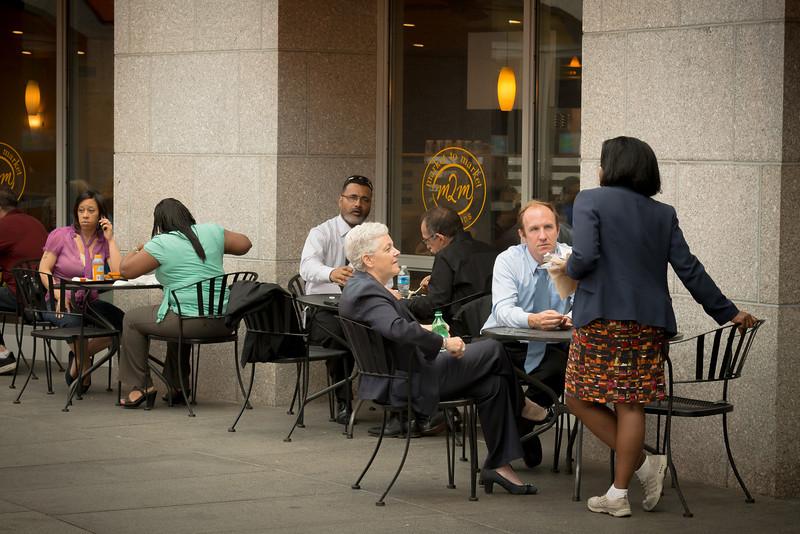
Day in the Life - June 2, 2014

12:01 pm - Taking a quick break between media interviews, McCarthy catches up with EPA Chief of Staff Gwen Keyes Fleming and EPA Public Affairs Director Tom Reynolds. (10/15)